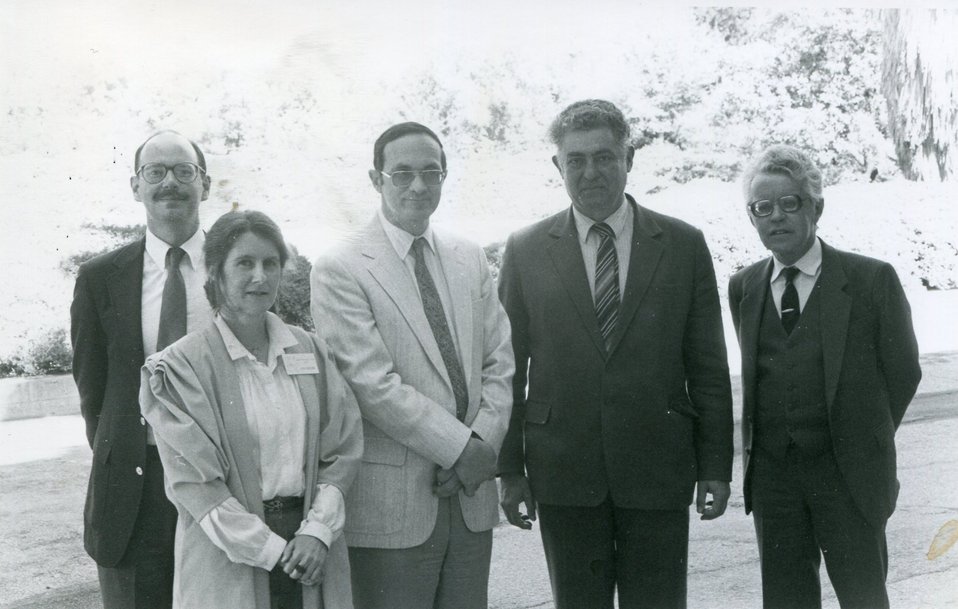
Scientific Exchange

Steven Kohl of the Fish and Wildlife Service Wildlife Without Borders program joins Russian Academy of Sciences officials in visiting Rancho Santa Ana Botanic Garden, Claremont, CA on a scientific exchange ca. 1988